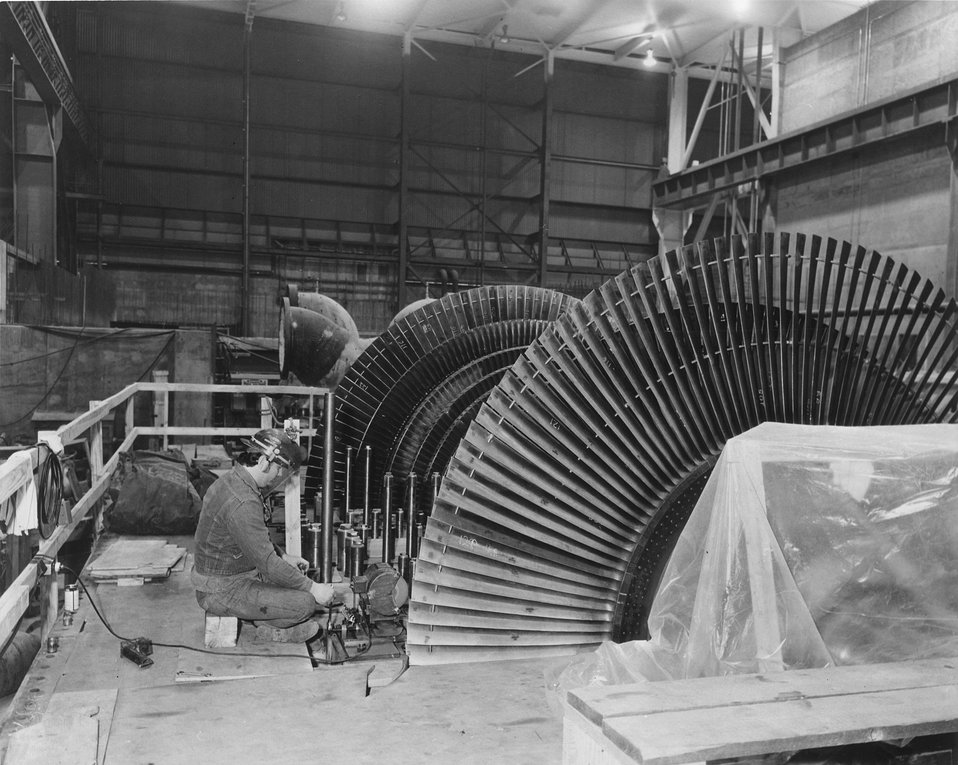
Browns Ferry Nuclear Plant...View of the rotor blades of the TVA Browns Ferry Nuclear Power Plant Unit 2 main turbine. Circa 1973.